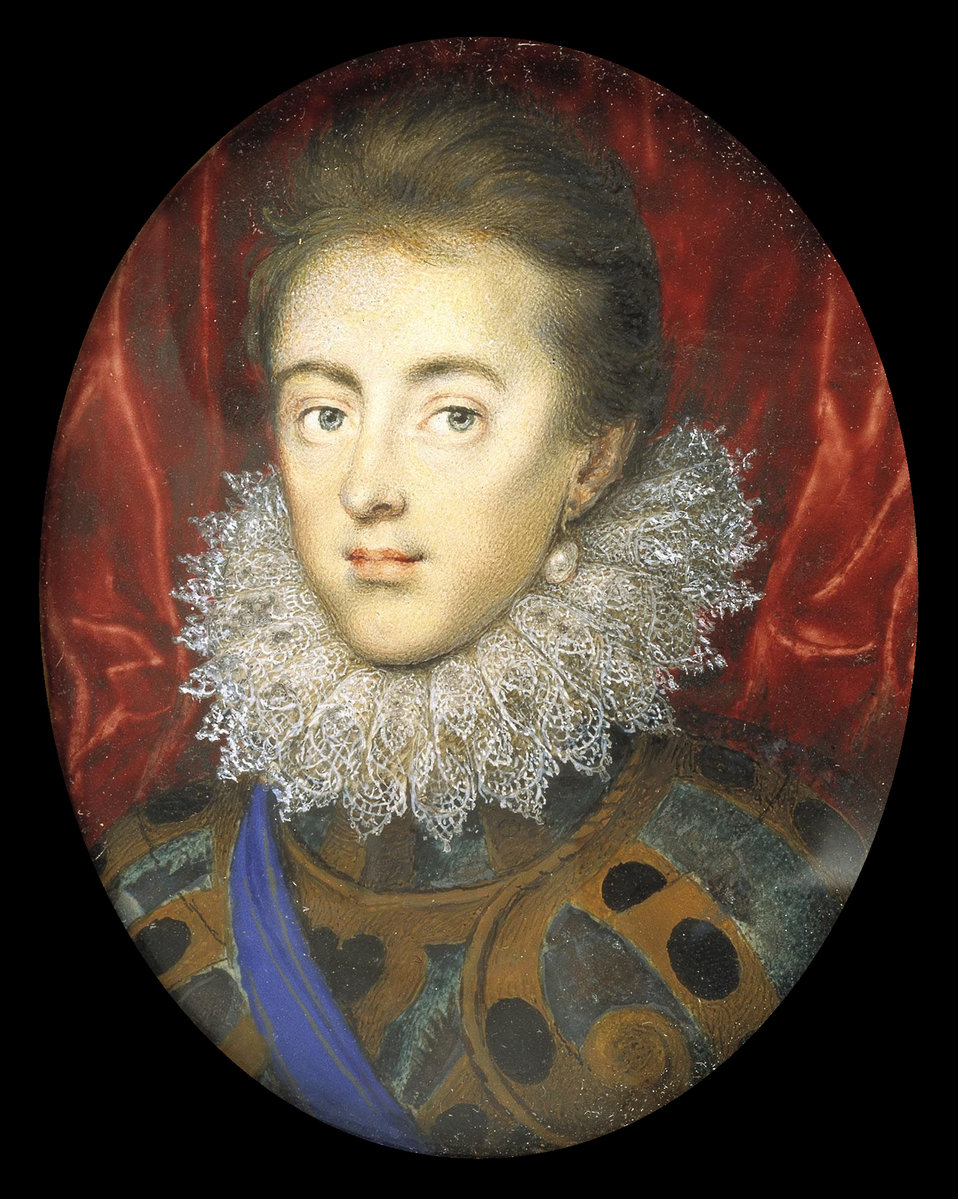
Charles, Prince of Wales (later Charles I) by Isaac Oliver